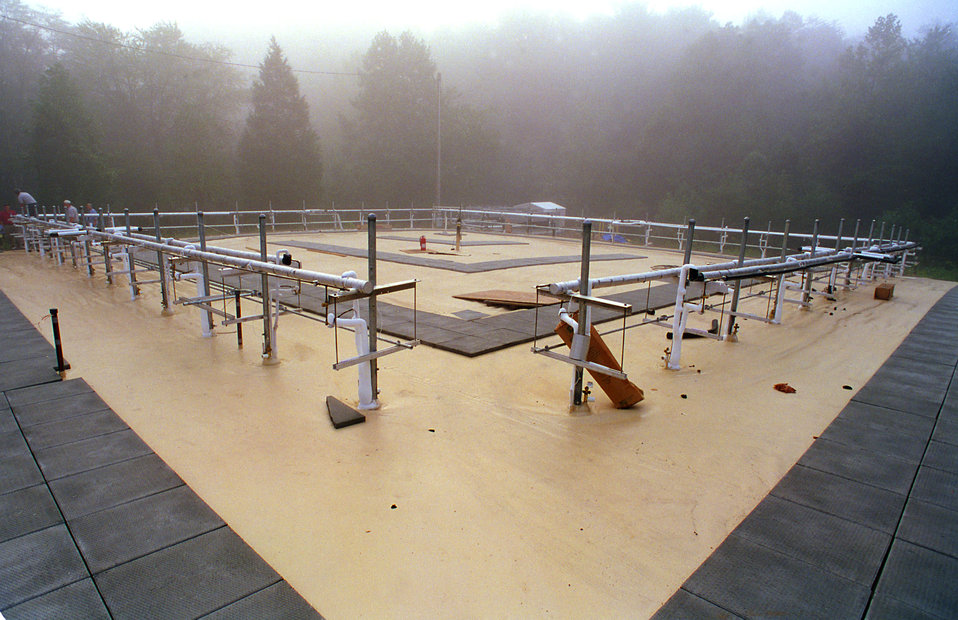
Cryogenics Barrier Demo Project at ORNL 1997

97-489-6 DOE photo Lynn Freeny 1997 Oak Ridge Tennessee